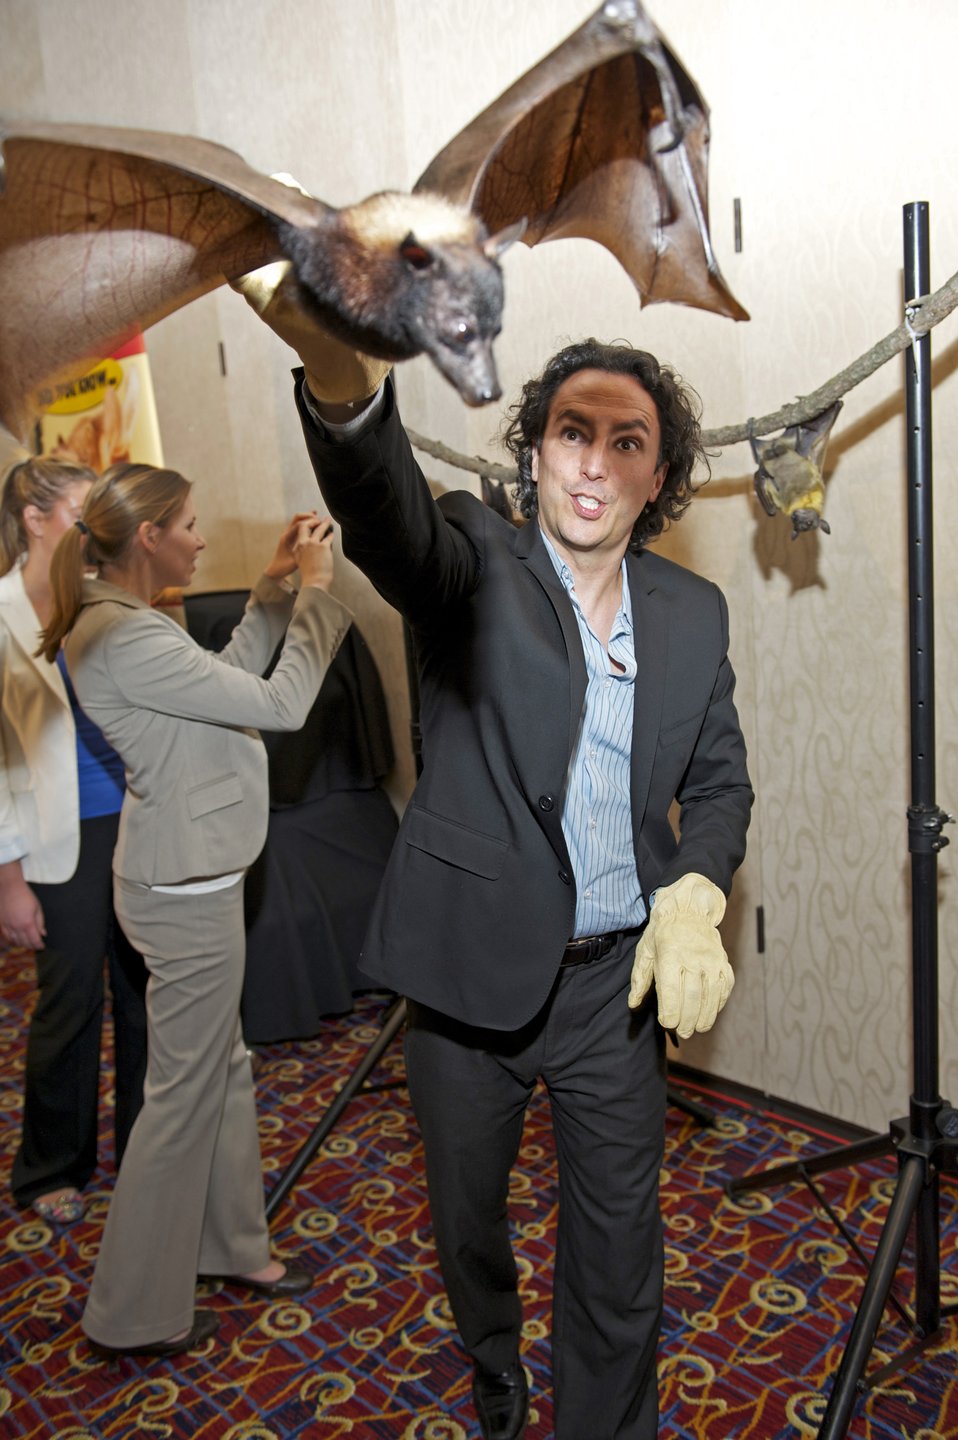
Wings mug

Keeping the awards ceremony lively, Rob Mies, from the Organization for Bat Conservation, shows off a live Giant Flying Fox from Southeast Asia.